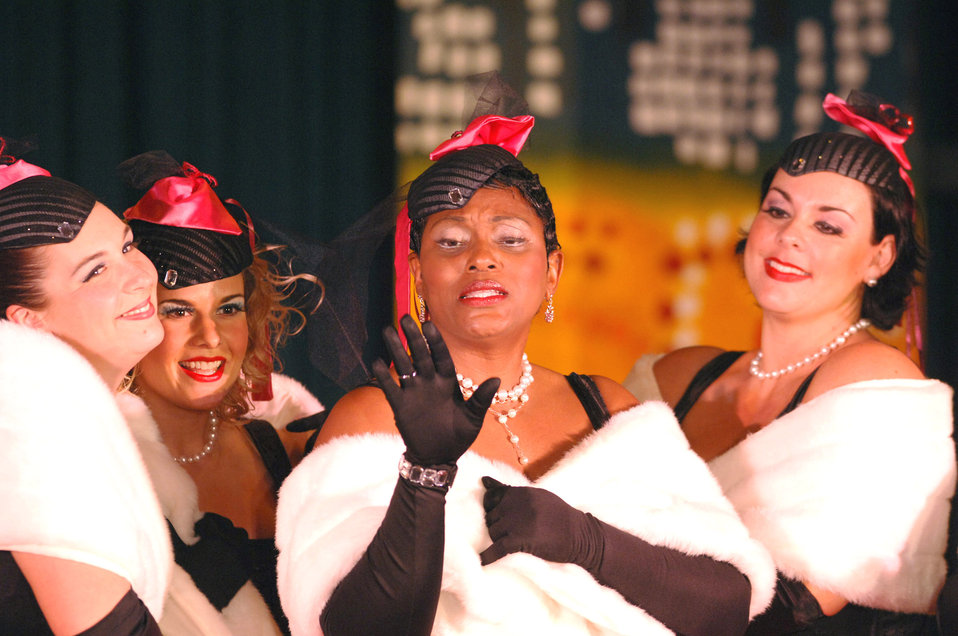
Top performers

YOKOTA AIR BASE, Japan (AFPN) -- Trenetta Jones, a member of the Yokota Players, performs in a